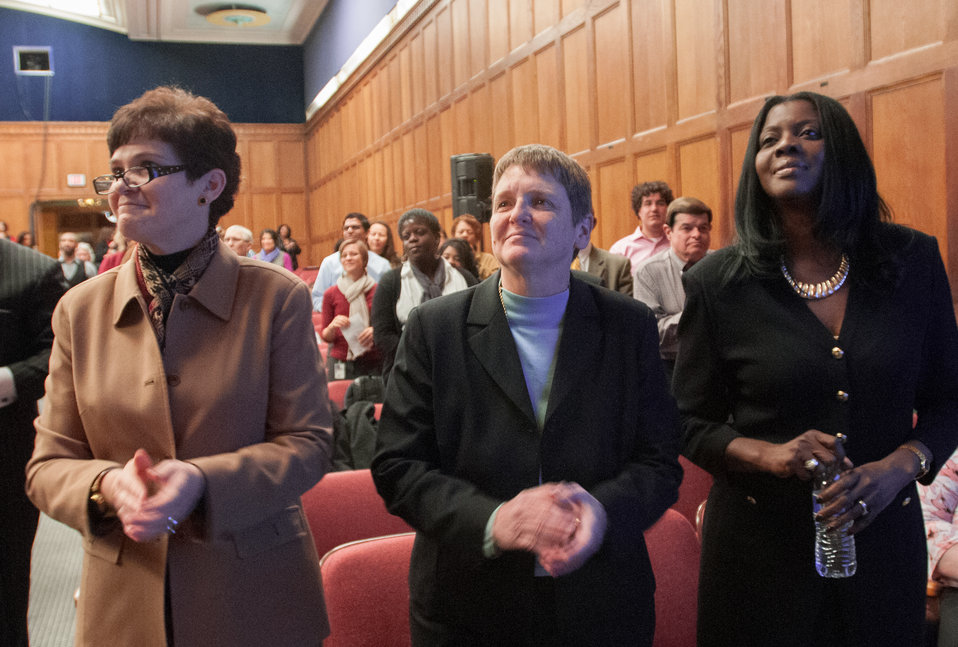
U.S. Department of Agriculture (USDA) celebrates the 2013 Women’s History Month Observance in the Jefferson Auditorium with an event themed “Women Inspiring Innovation Through Imagination: Celebrating omen in Science, Technology, Engineering, and Mathematics, on Thursday march 21, 2013. The keynote speaker was American Association of University Women Executive Director and CEO Linda Hallman. Also providing remarks were Agriculture Deputy Secretary Dr. Kathleen Merrigan; Rural Development Acting Deputy Under Secretary Judith Canales; Deputy Assistant Secretary for Administration Deputy Assistant Secretary Robin Heard; and Agriculture Research Service Associate Administrator for National Programs Dr. Chavonda Jacobs-Young.